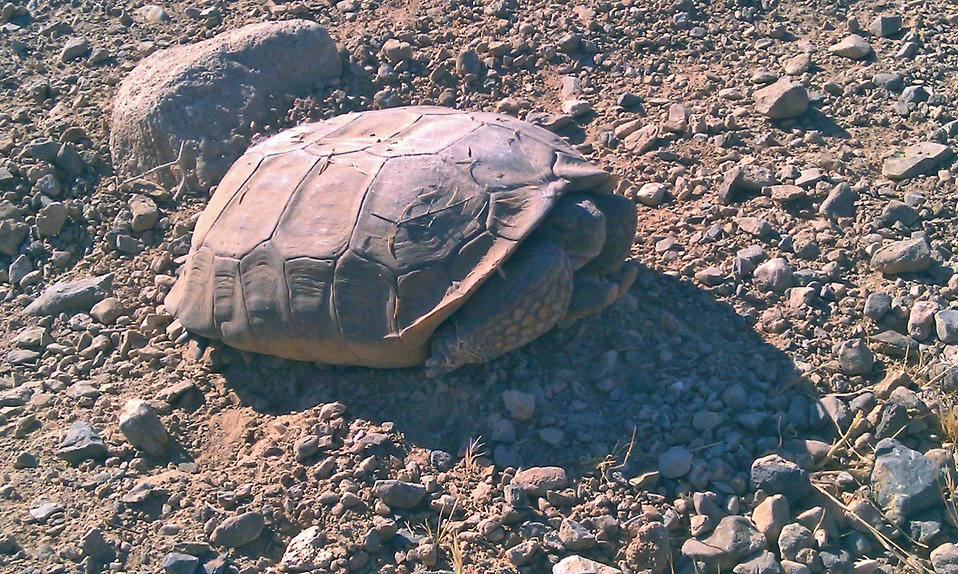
Desert Tortoise1

Desert tortoise near Las Vegas.